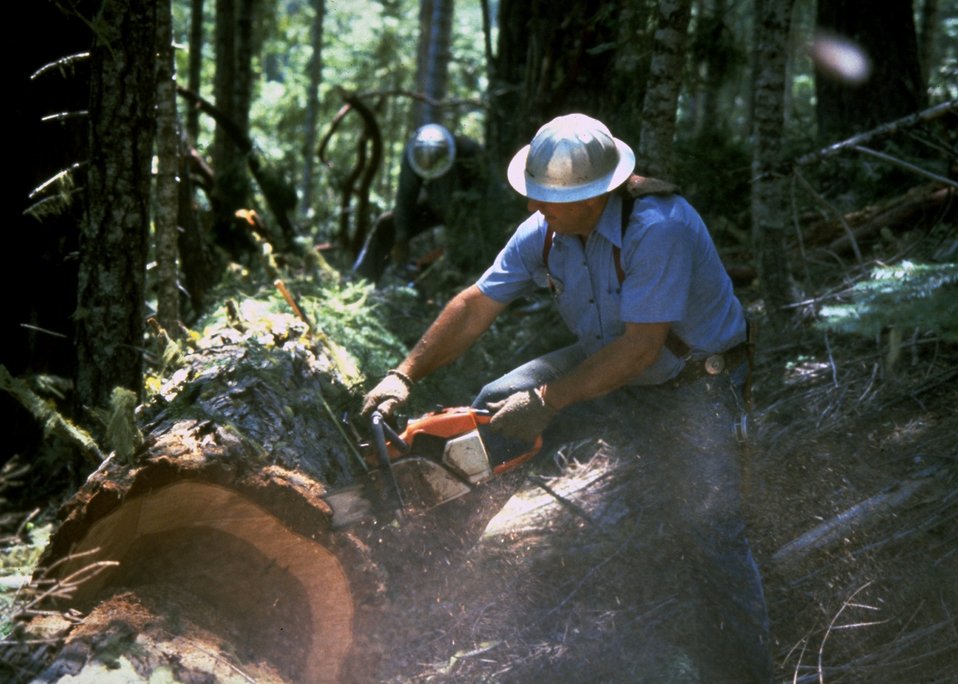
Logger bucking a tree.